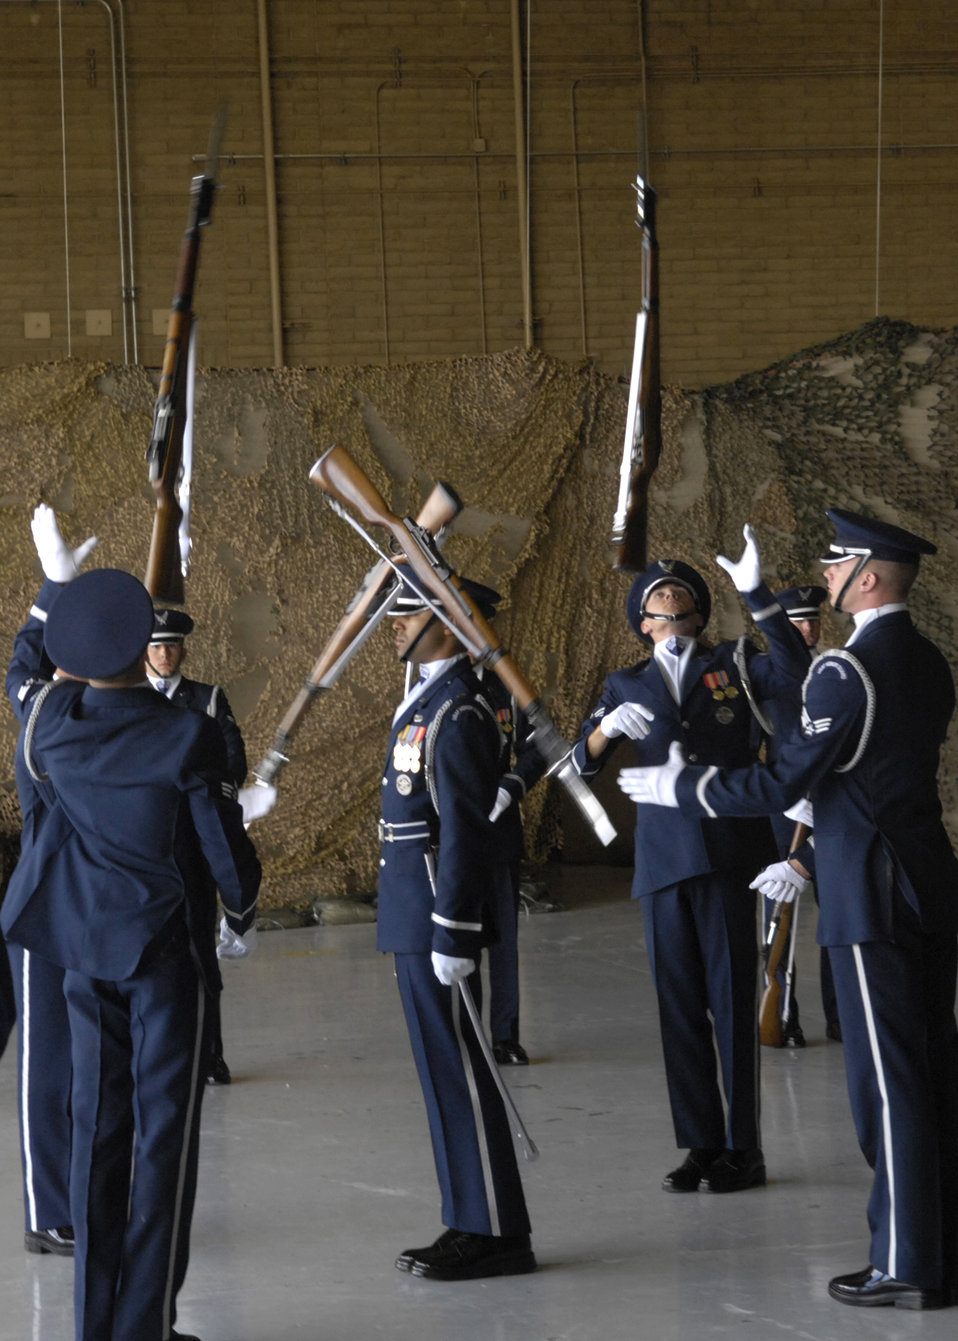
Showcasing the Air Force mission

The United States Air Force Honor Guard Drill Team performs March 24 during the Luke Air Force Base, Ariz., air show. The drill team is the traveling component of the Air Force Honor Guard and tours Air Force bases worldwide showcasing the precision of today's Air Force to recruit, retain and inspire Airmen for the Air Force mission.